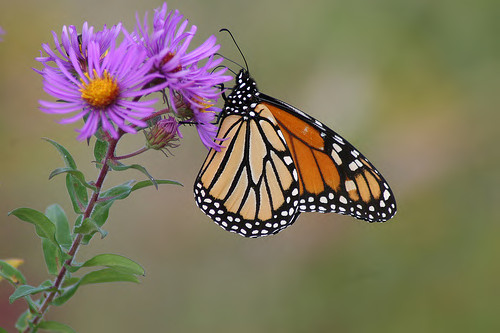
monarch butterfly on New England aster

Great Bay National Wildlife Refuge, MA